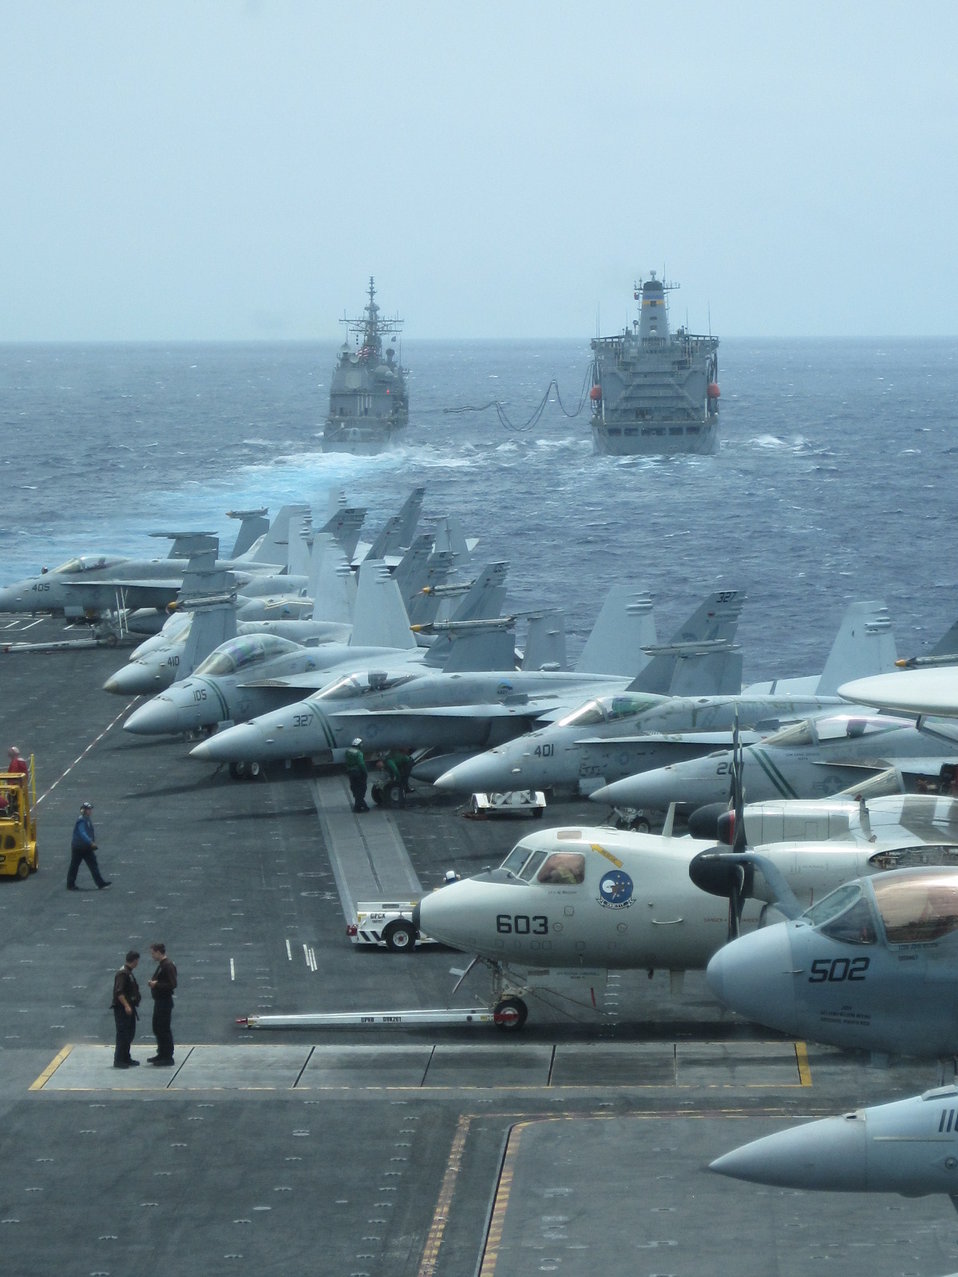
Jets and ships refueling with advanced biofuels

U.S. Navy ships and planes off the coast of Hawaii participate in the U.S. Navy’s Rim of the Pacific Exercises (RIMPAC) Great Green Fleet (GGF) demonstration in Honolulu, HI on July 18, 2012. A large number of the Navy ships and aircraft were powered by biofuels produced from American grown algae and waste animal fats. For nearly four years, Navy Secretary Mabus and Agriculture Secretary Vilsack have made a coordinated and concerted effort to support the development and stand-up of a domestic biofuels sector. The USDA has lent support to furthering research and business start-ups for biomass production and waste stream diversion, and the Navy has sought to test, demonstrate and accelerate investments in advanced biofuels for use in its many platforms.